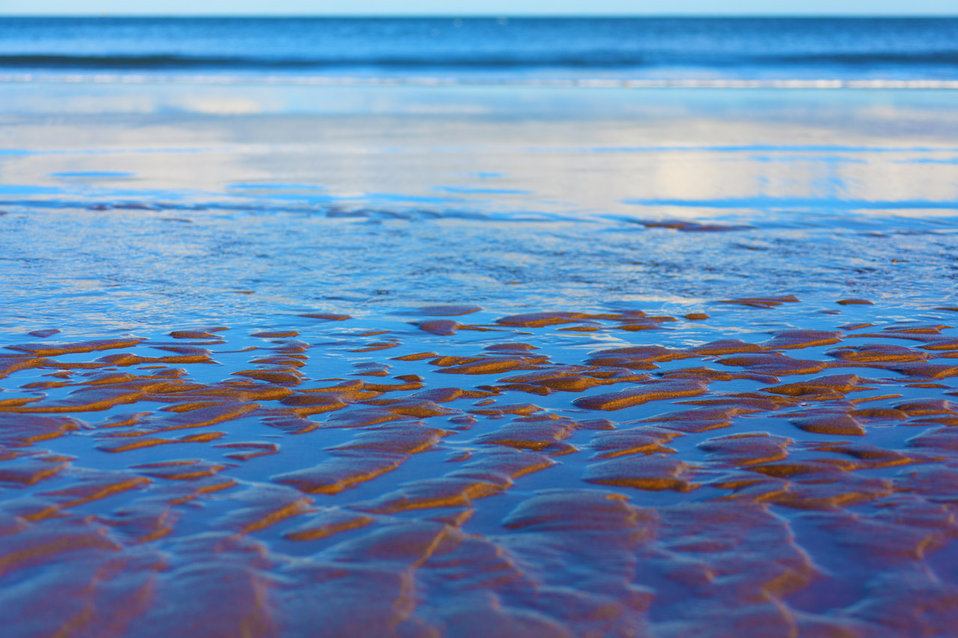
Sand texture and the sea

Sand texture and the blue sea in the background.